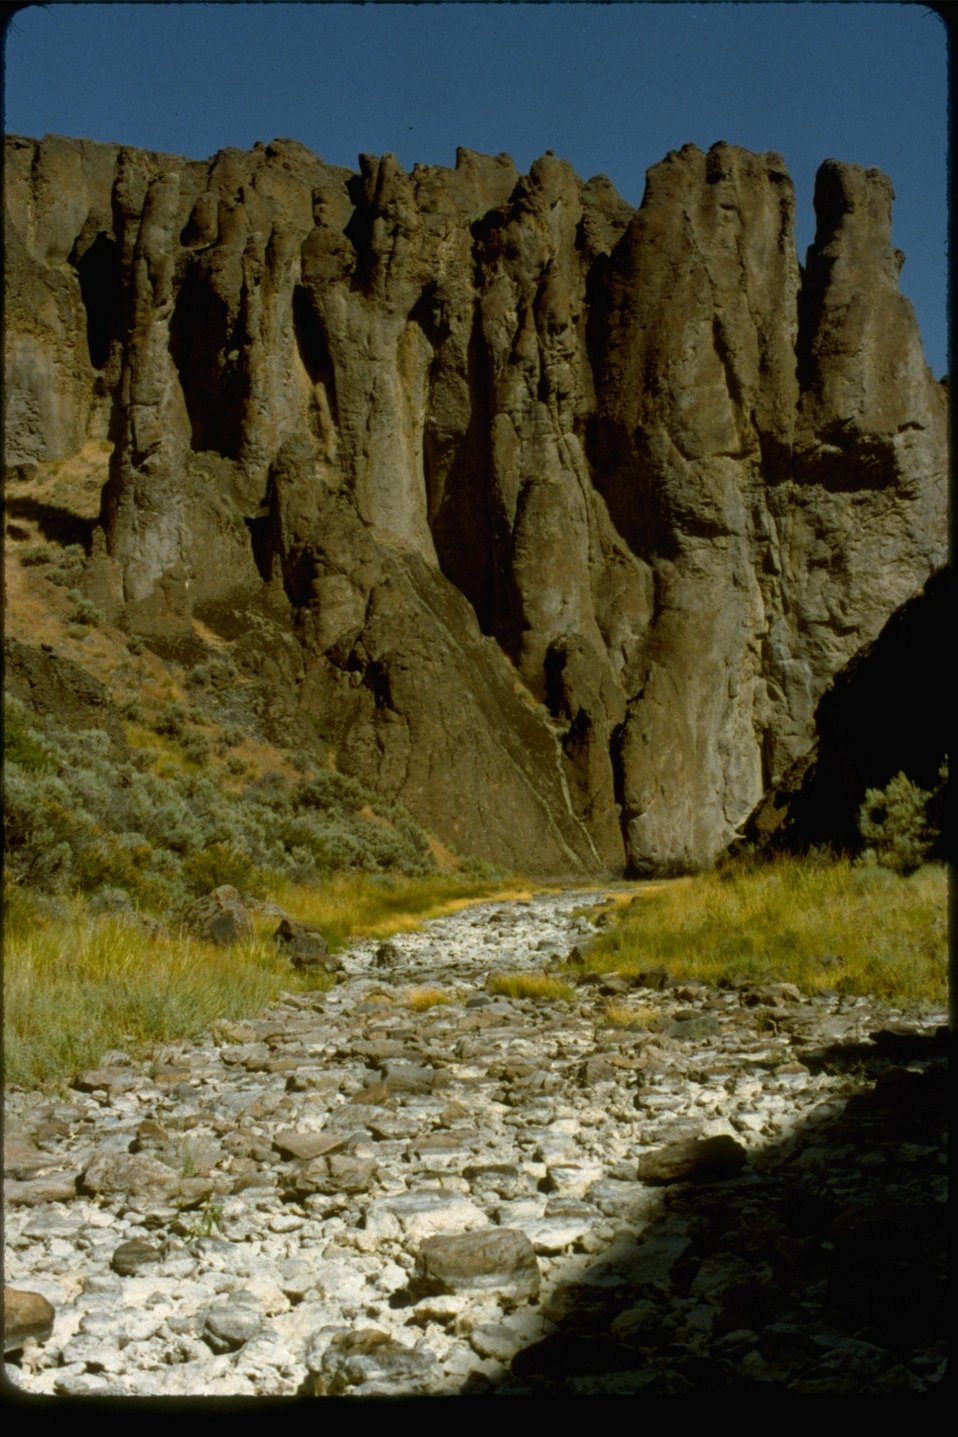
Cliffs and Rocks in the Upper West Little Owyhee Wilderness Study Area. OR 3-173.